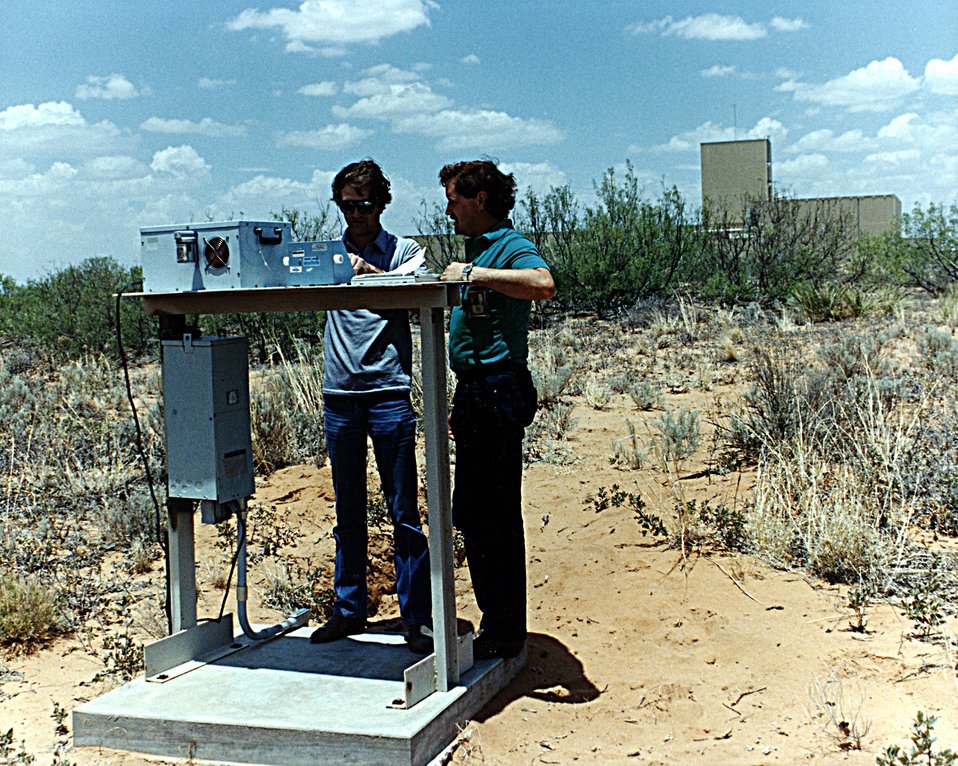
AIR MONITORING STATION AT WIPP.

THE WASTE ISOLATION PILOT PLANT IS A DOE RESEARCH AND DEVELOPMENT FACILITY FOR DEMONSTRATING THE SAFE DISPOSAL OF TRANSURANIC RADIOACTIVE WASTE. FOUR VERTICAL SHAFTS CONNECT THE SURFACE FACILITIES TO THE UNDERGROUND. THE SHAFTS, ONE 21 FEET IN DIAMETER AND THE OTHERS 14 FEET IN DIAMETER, PROVIDE A MEANS OF TRANSPORTING THE WASTE, WORKERS, EQUIPMENT, MINED SALT, AND FRESH AIR FROM THE SURFACE TO THE UNDERGROUND SALT ROCK FORMATION THAT IS BEING TESTED TO DETERMINE SUITABILITY FOR RADIOACTIVE WASTE STORAGE. RADIOACTIVE BIN-SCALE TESTS ARE SCHEDULED TO BEGIN BEFORE THE END OF 1991.